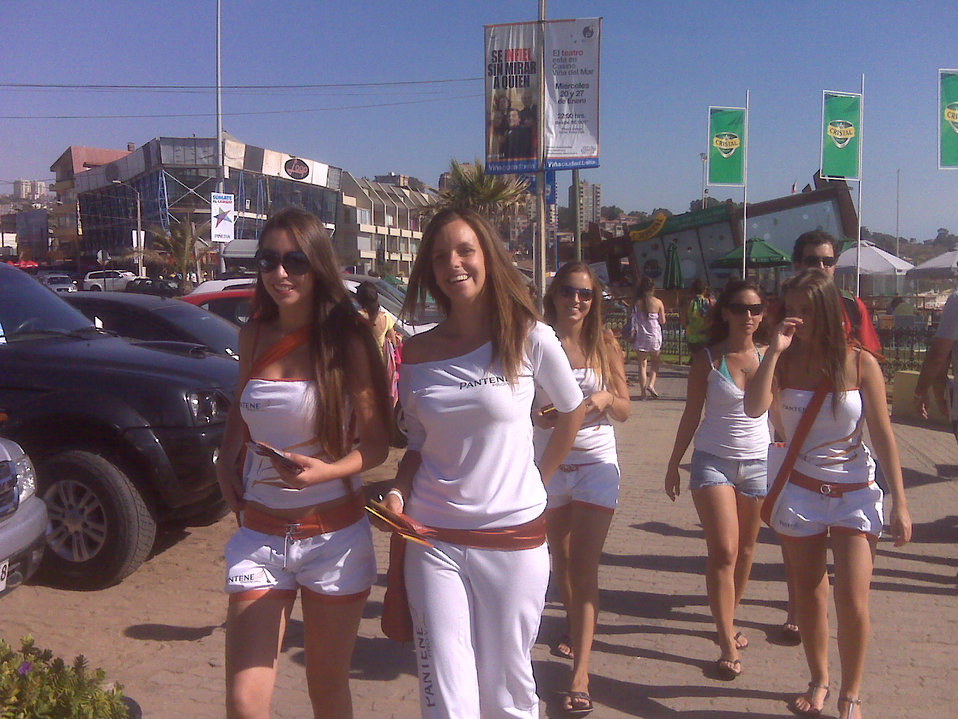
Models, Chile. 'Some of the beautiful women who can be found all over Planet Earth.'